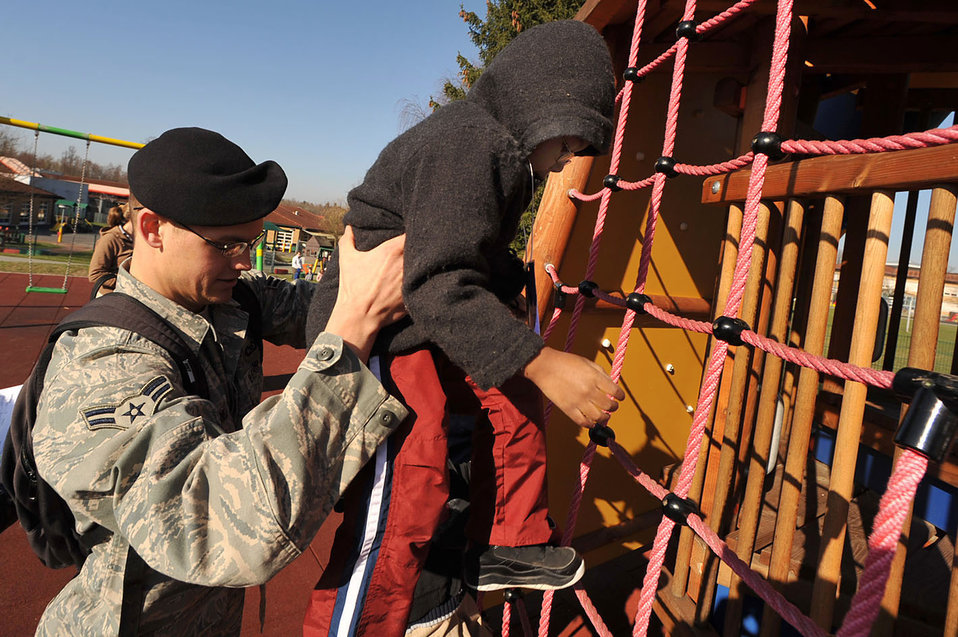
Ramstein Airmen provide 'boot camp' for military children

Airman 1st Class Brian Crabill gives a child a boost up on the playground during